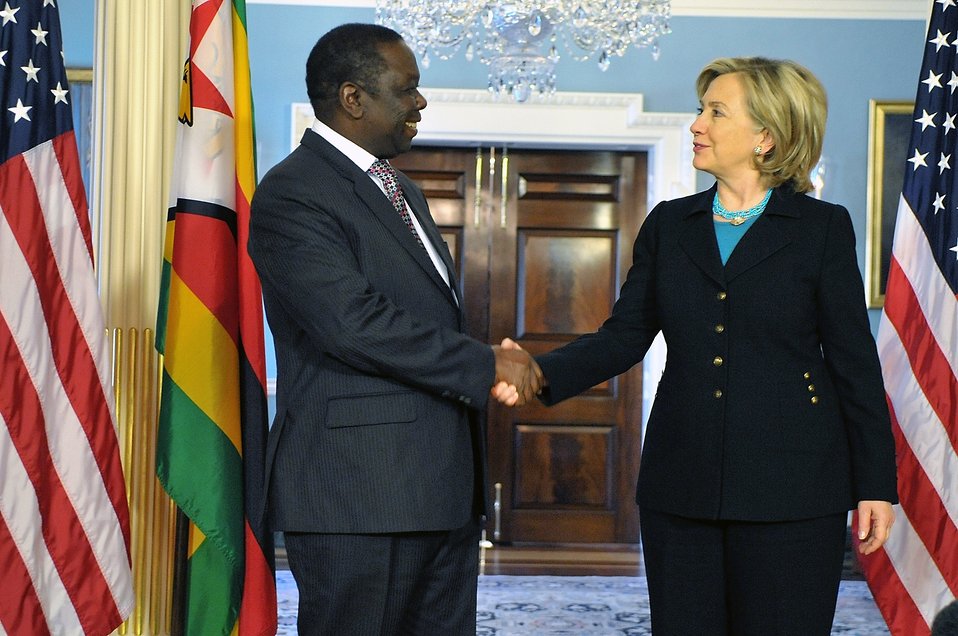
Secretary Clinton Shakes Hands With Zimbabwean Prime Minister Tsvangirai

U.S. Secretary of State Hillary Rodham Clinton shakes hands with His Excellency Morgan Tsvangirai, Prime Minister of the Republic of Zimbabwe, after their bilateral meeting at the U.S. Department of State, Washington, D.C., May 10, 2010.